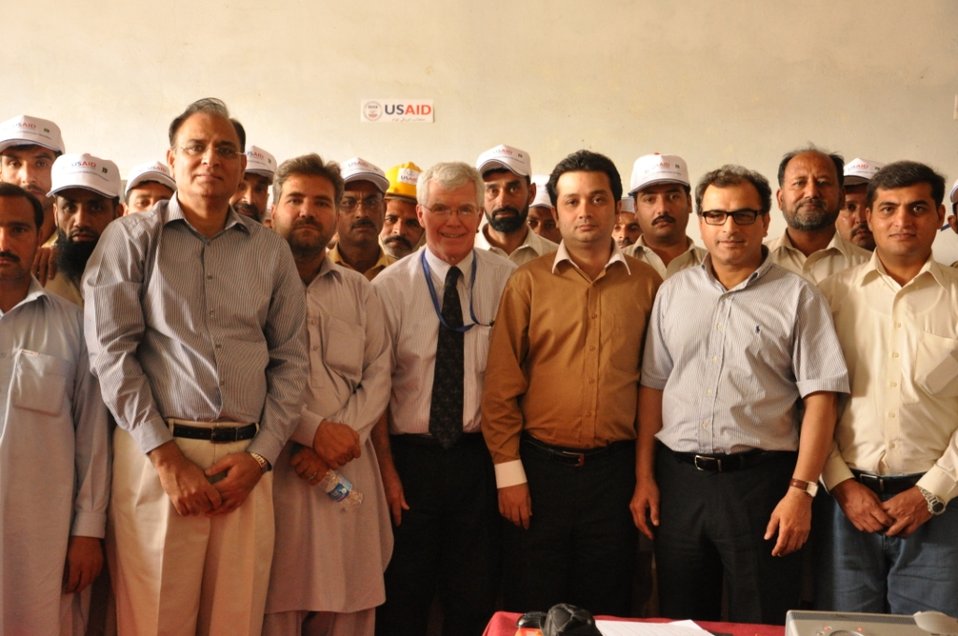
Usaid To Provide Technical Assistance To Improve Efficiency Of Tube-Wells In Iesco By Installing 2600 Lt Capacitors at Islamabad on April 26, 2012